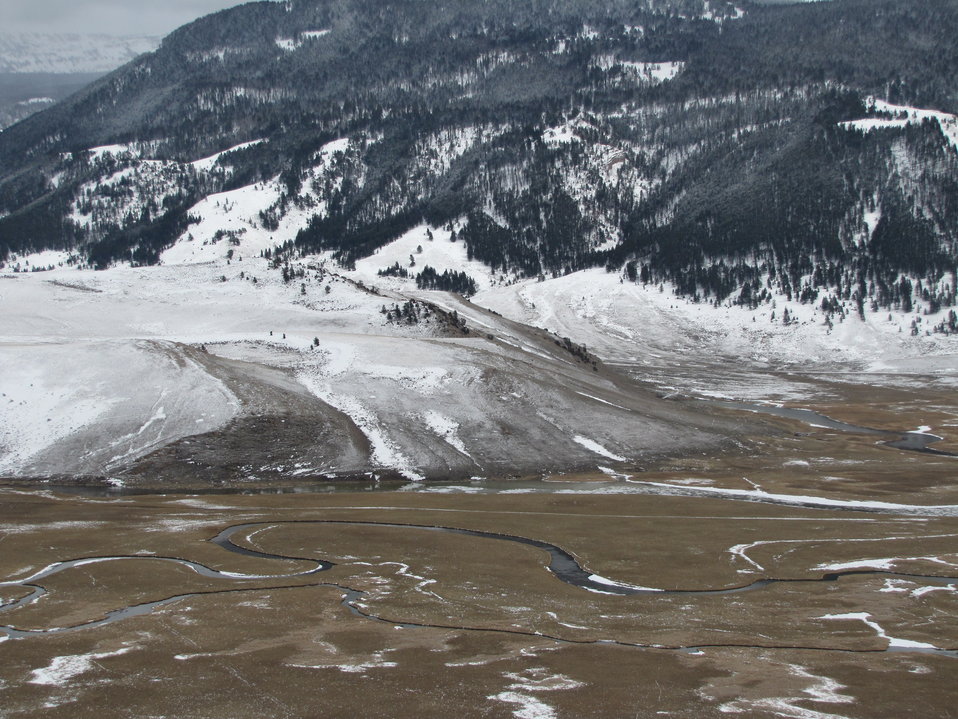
View from East Gros Ventre Butte

This view of the National Elk Refuge from East Gros Ventre Butte features the south end of Miller Butte and the Flat Creek marsh area.